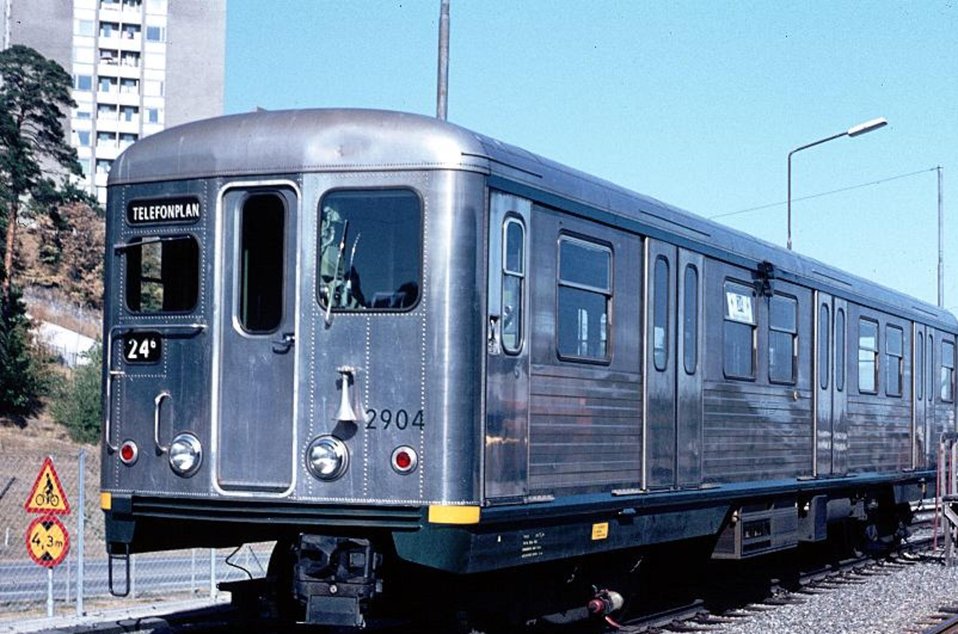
A Picture of The C5/Silverpilen (The Silver Arrow)